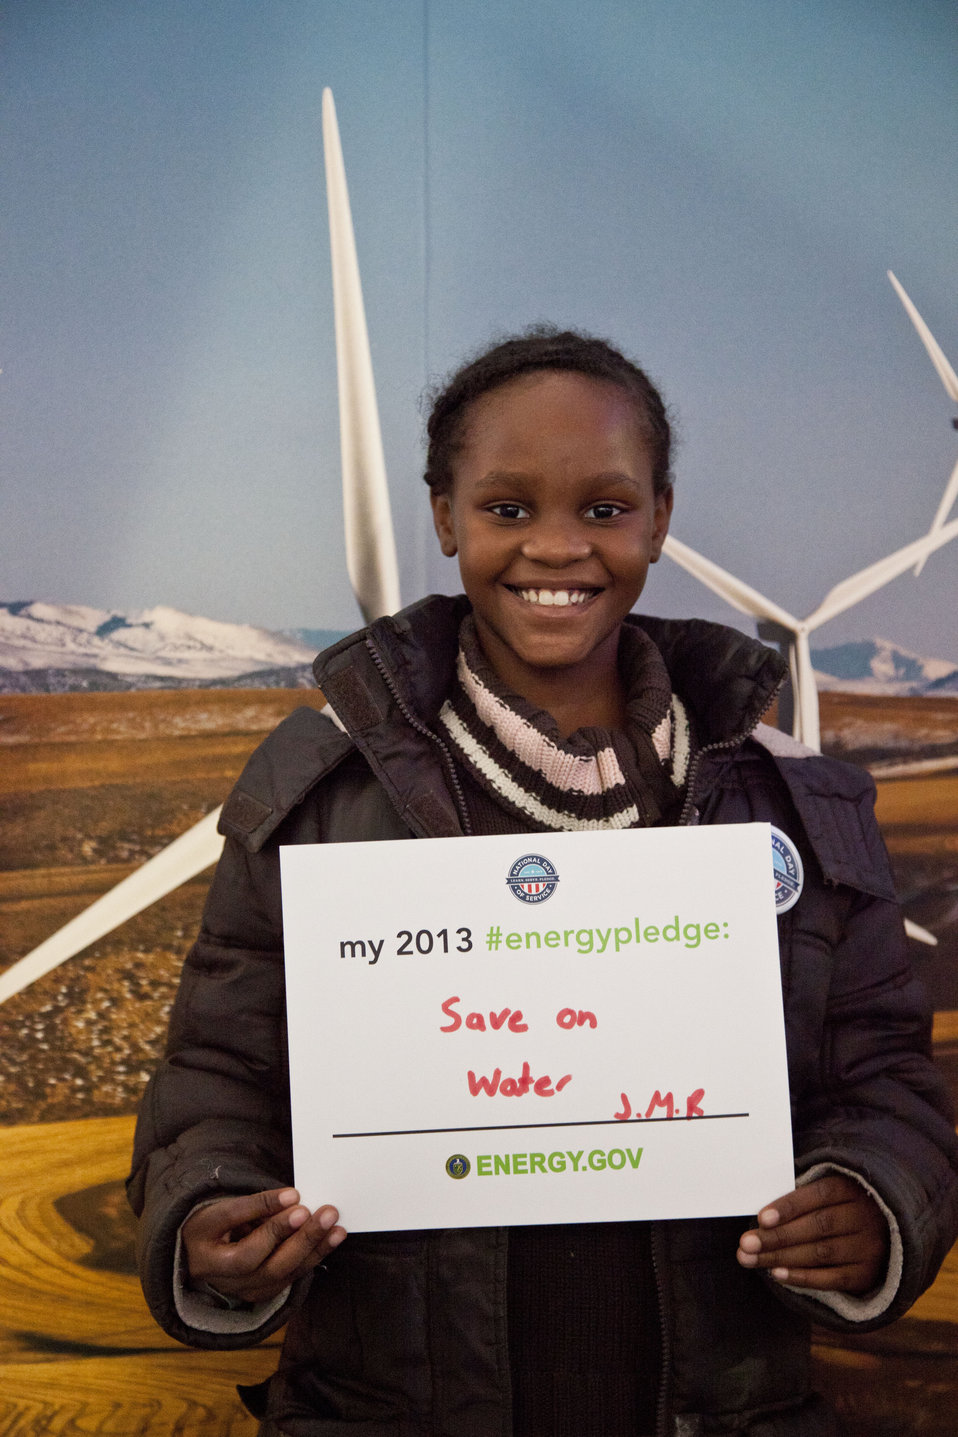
What's your #energypledge?